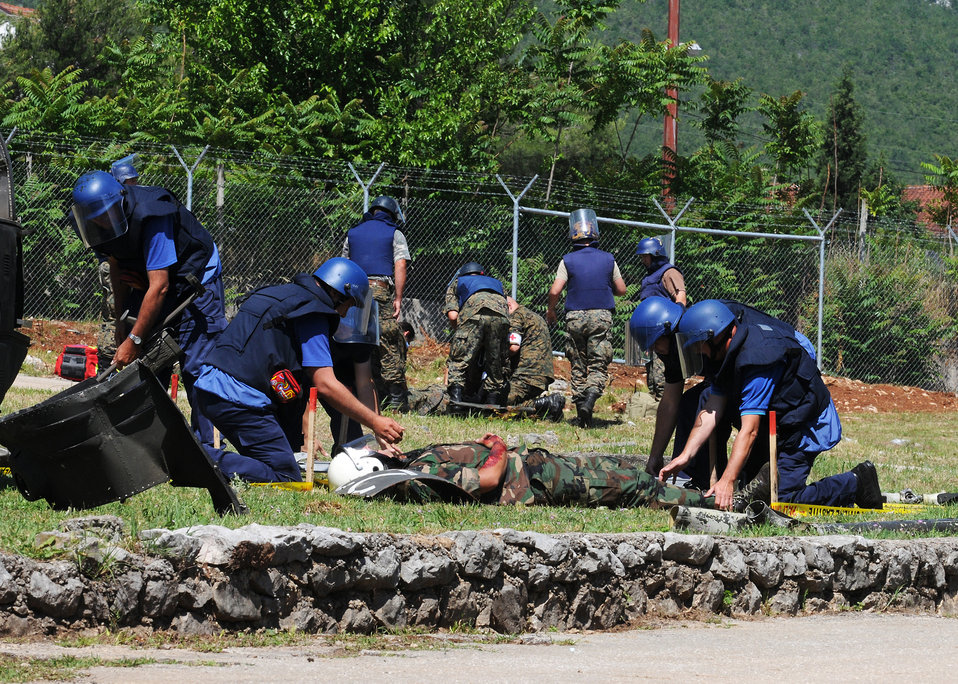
SR12

Participants of Shared Resilience 2012 remove a victim from a simulated mine field during the exercise at Capljina, Bosnia-Herzegovina, June 6, 2012. The goals of the exercise are to strengthen interoperability, facilitate training in crisis response and disaster management, and validate the readiness of deployable military medical and humanitarian assistance teams.